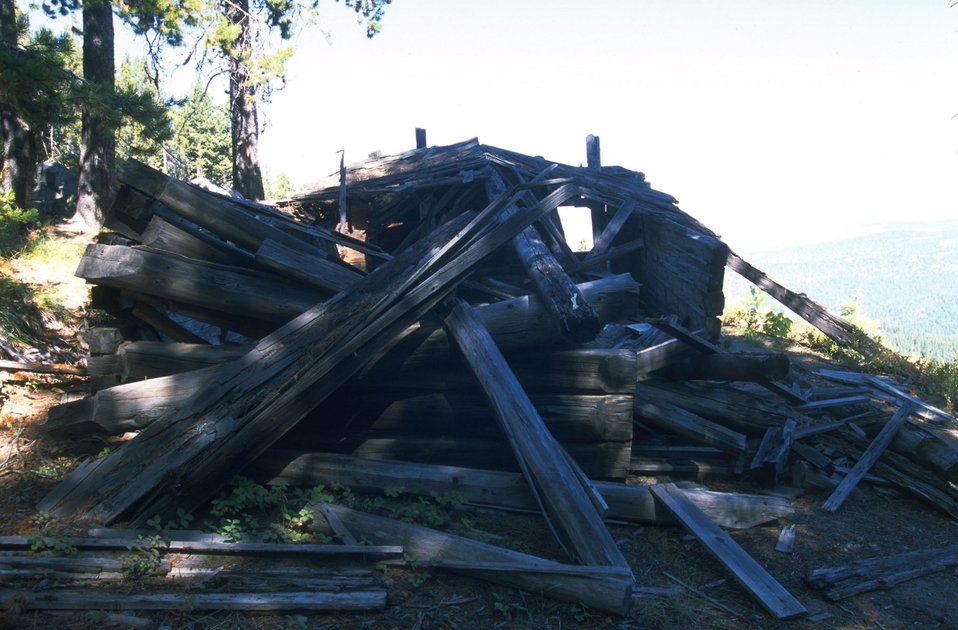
Coloma Ghost Town--collapsing cabin